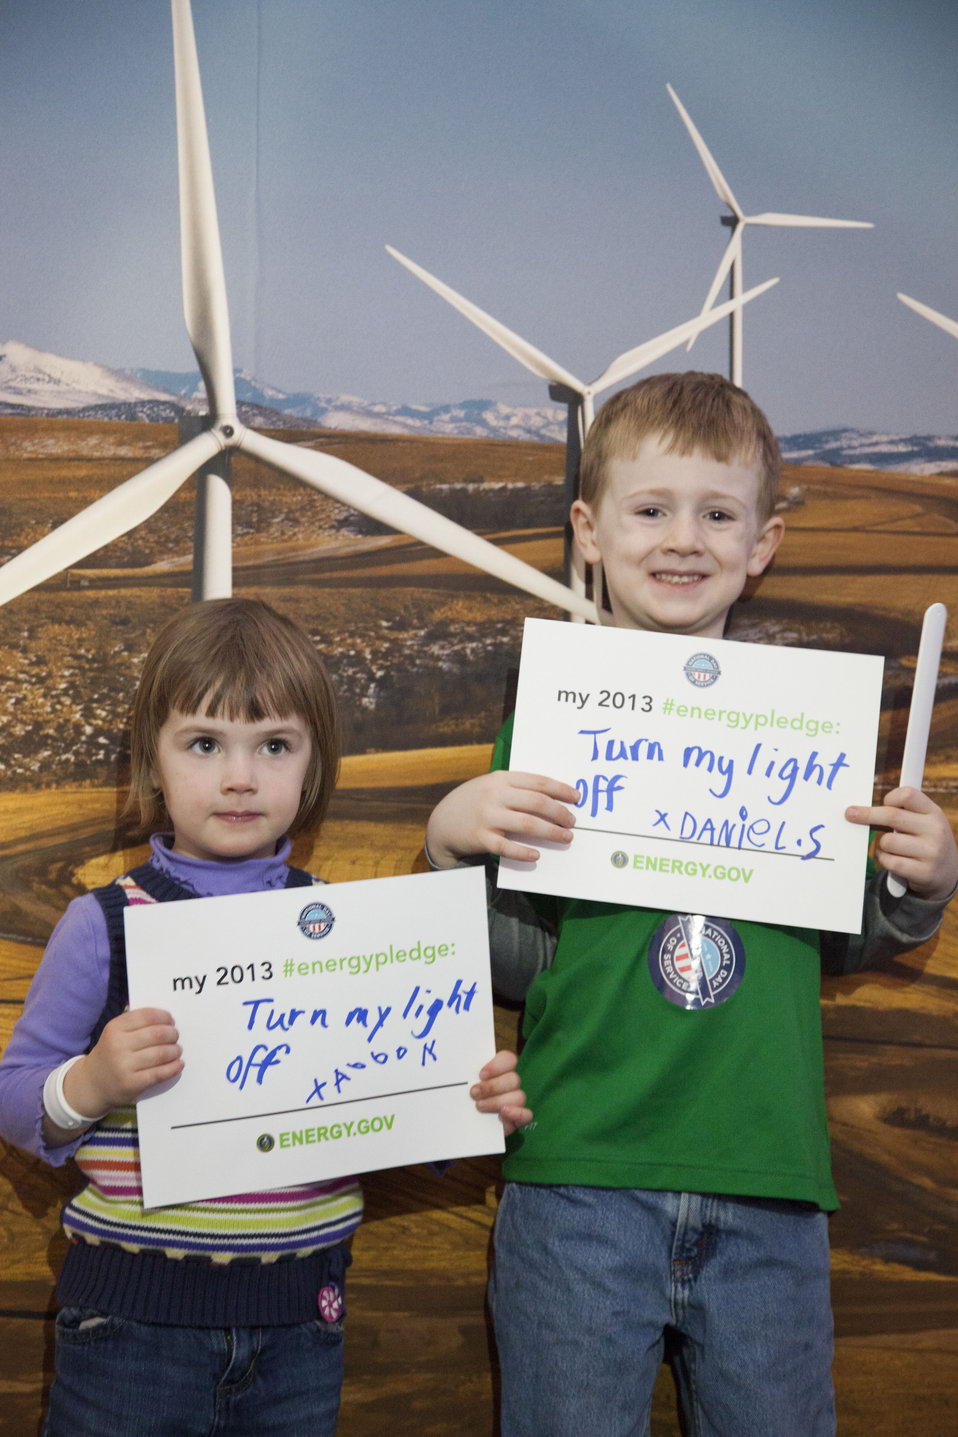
What's your #energypledge?